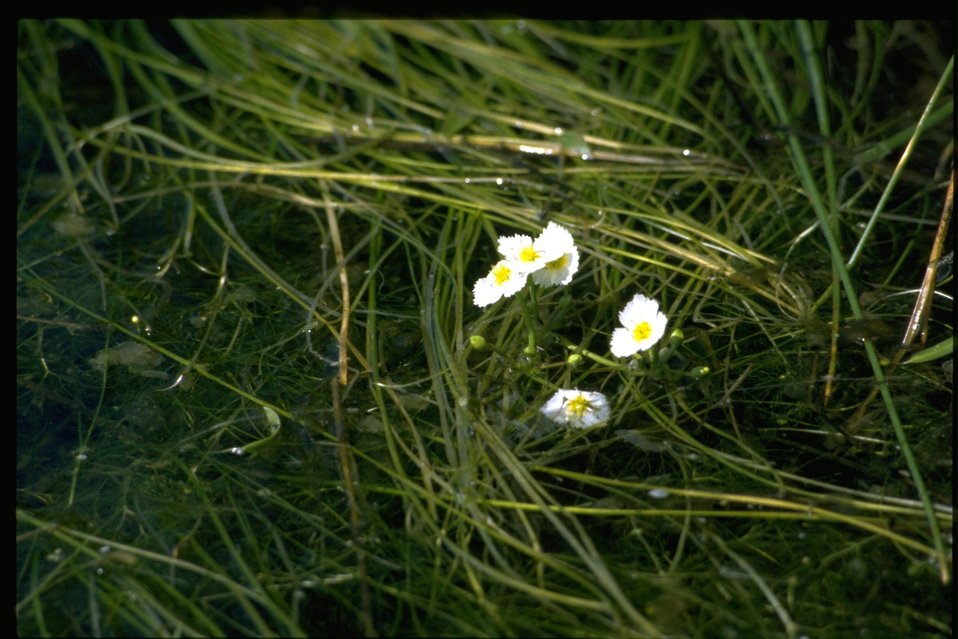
Far shot of Fringed Water Plantain habitat.